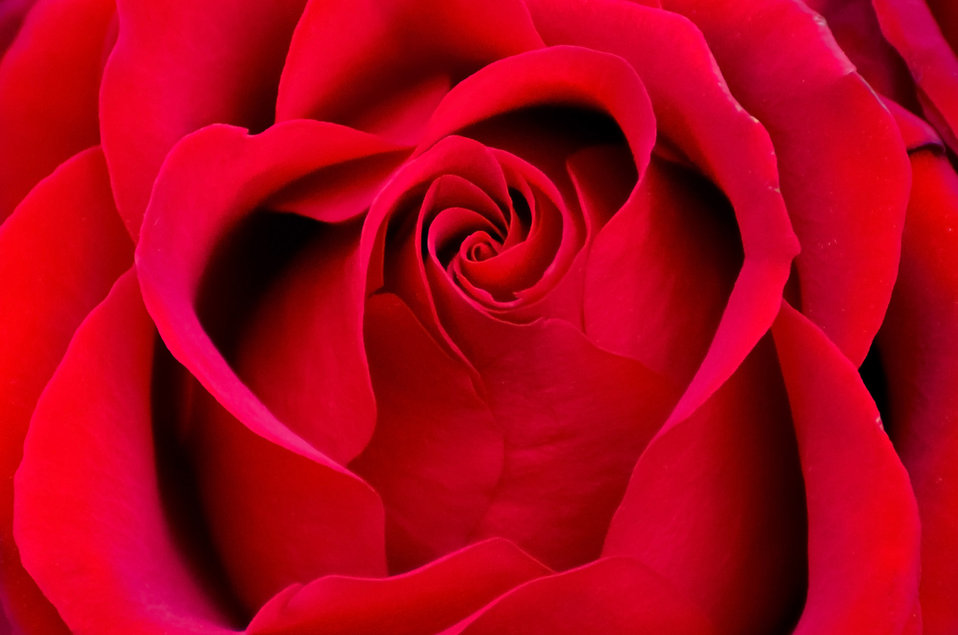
Beautiful red rose.